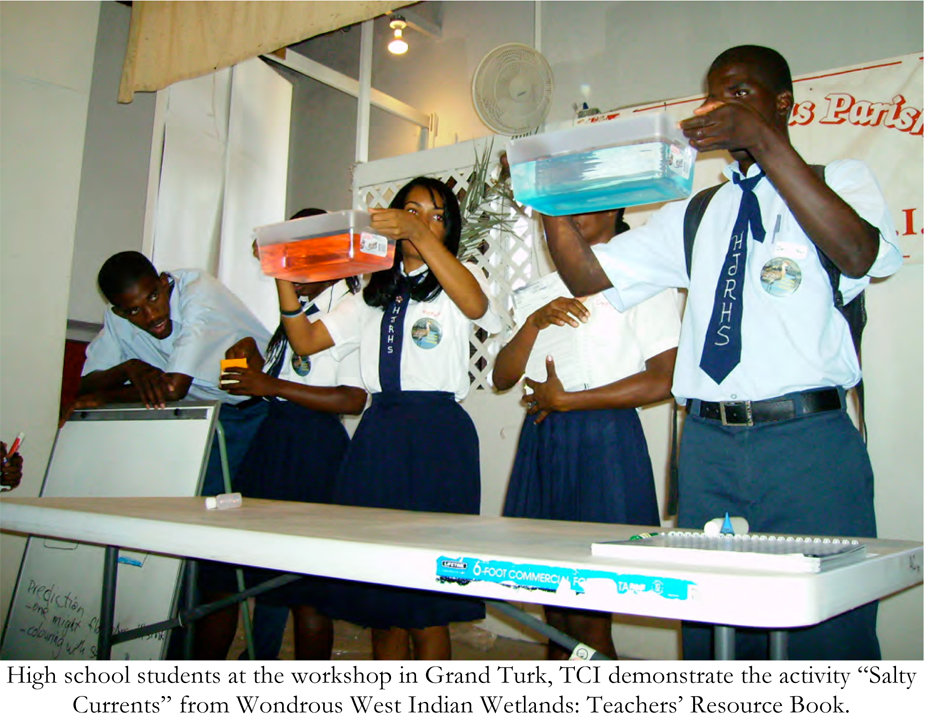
G234 2010 (8)